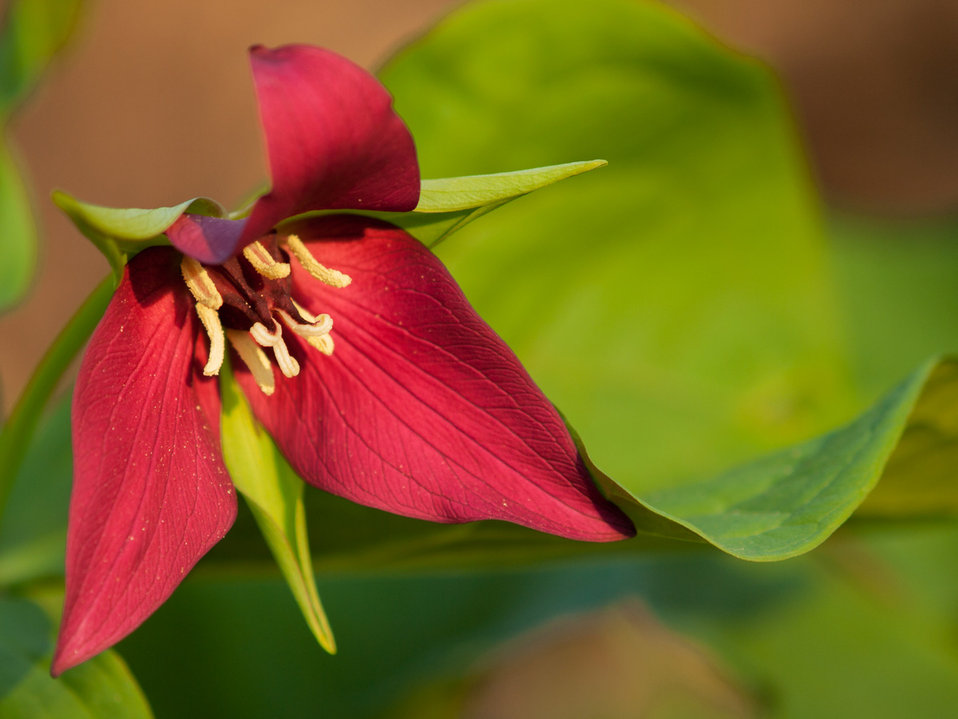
Red Trillium

Photographed in Hadley, MA.